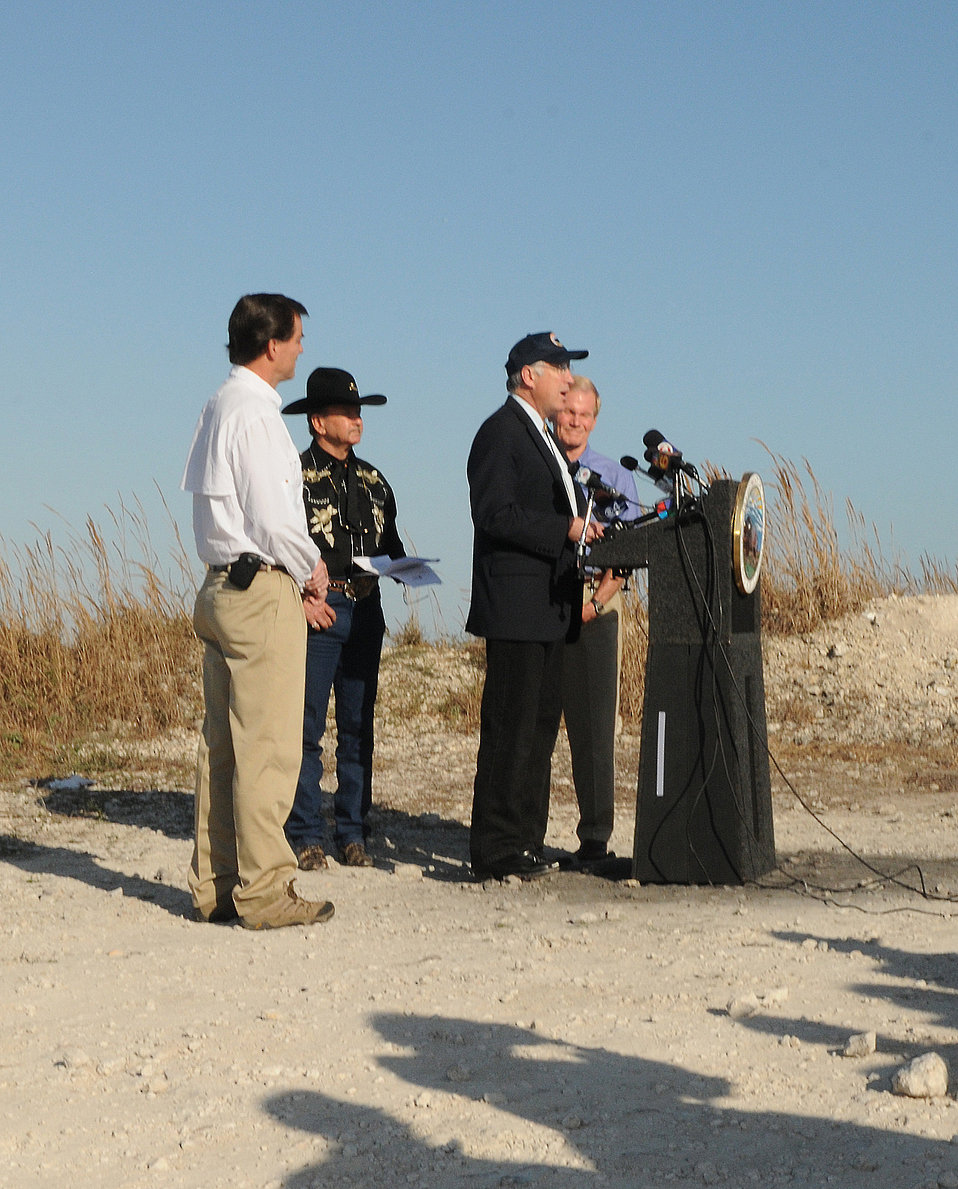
Secretary Salazar, Senator Ben Nelson, and Dan Ashe at Podium